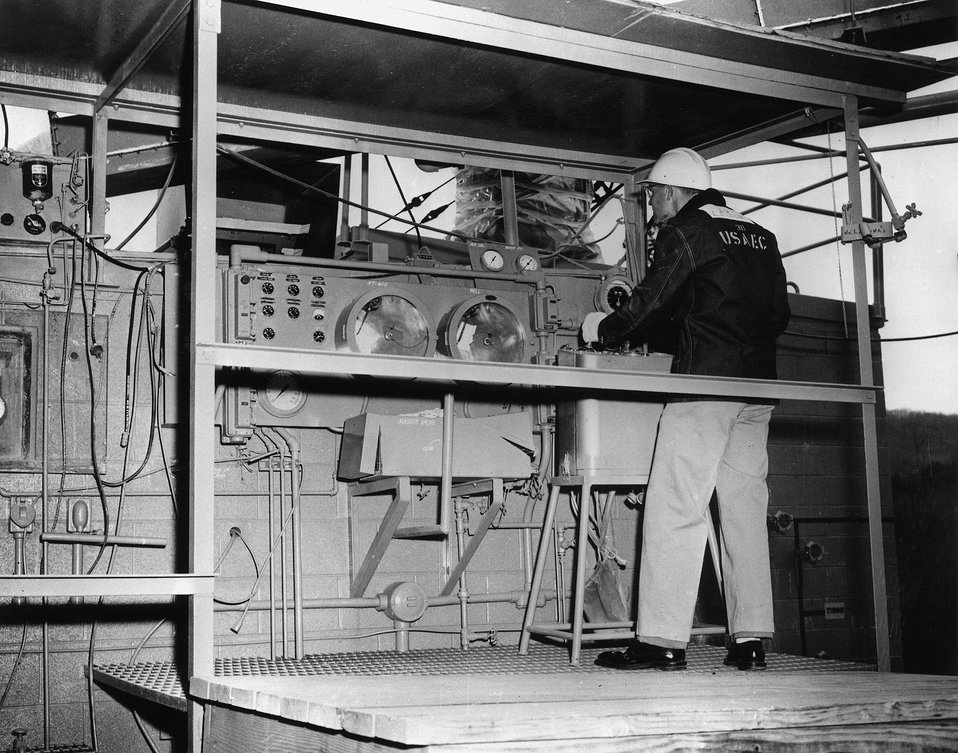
Oak Ridge National Laboratory will make its first permanent intermediate-level radioactive waste disposal at this surface plant. c. 1967